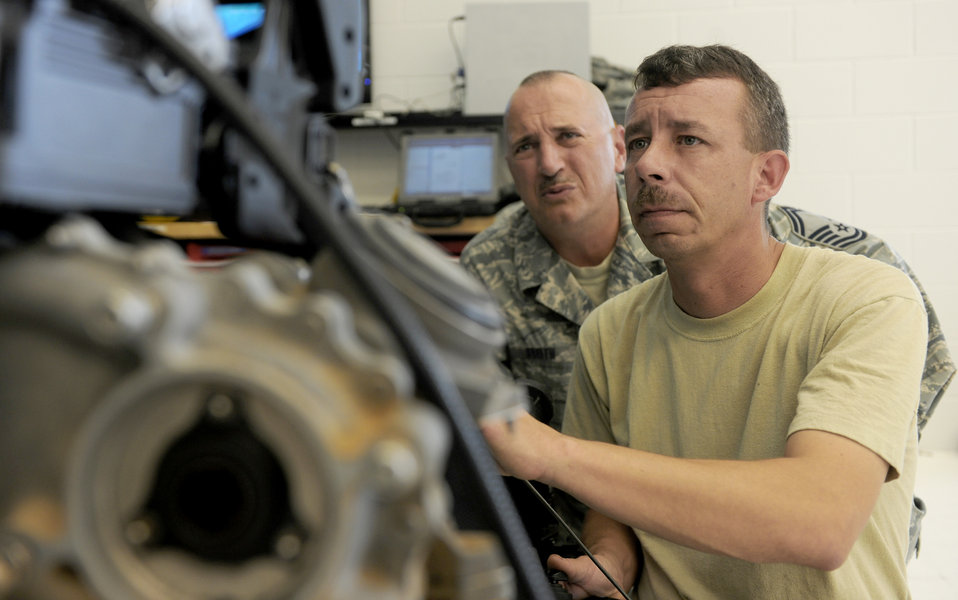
Engine mechanics cross train

Senior Master Sgt. David Smith observes Tech. Sgt. Charles Carpentier while he examines the inside of a TF-34 engine July 22, 2010, at Moody Air Force Base, Ga. Sergeant Smith is the 23rd Component Maintenance Squadron propulsion flight chief. Sergeant Carpentier is the 23rd CMS combat search and rescue propulsion section chief. Sergeants Smith and Carpentier are working together to train aerospace propulsion technicians to work on any of the three aircraft engines there.